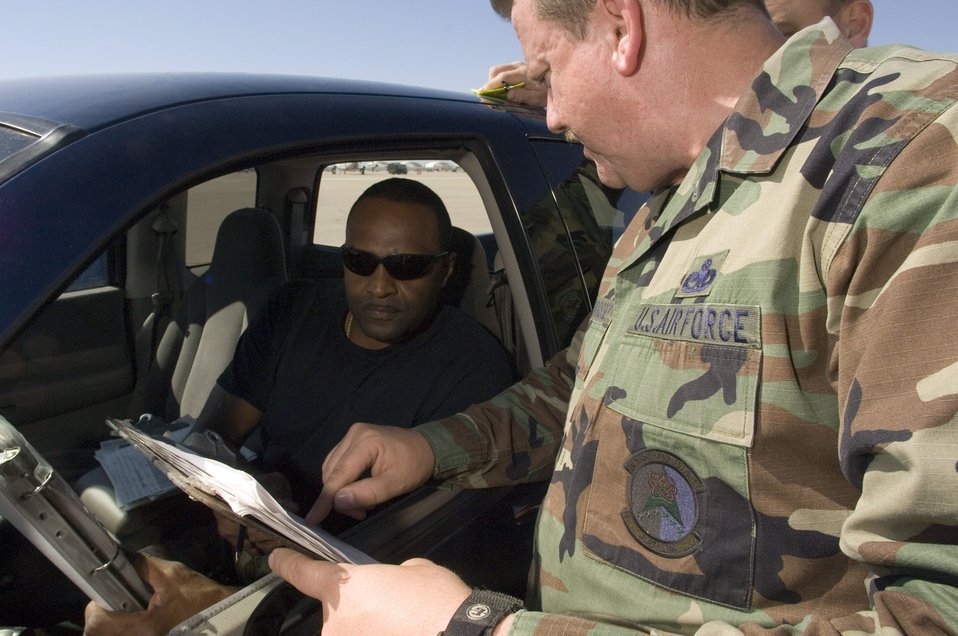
MORON AIR BASE, Spain -- Production superintendent Senior Master Sgt. Bill Morrissey (right) reviews repairs needed for C-5 Galaxy with expediter Tech. Sgt. Lionel Ford. Both Airmen are on temporary duty with the 4th Expeditionary Air Mobility Squadron to at this base in southern Spain. Sergeant Morrissey is a reservist from the 349th Component Repair Squadron and Sergeant Davis is with the 60th Aircraft Maintenance Squadron, both at Travis Air Force Base, Calif.